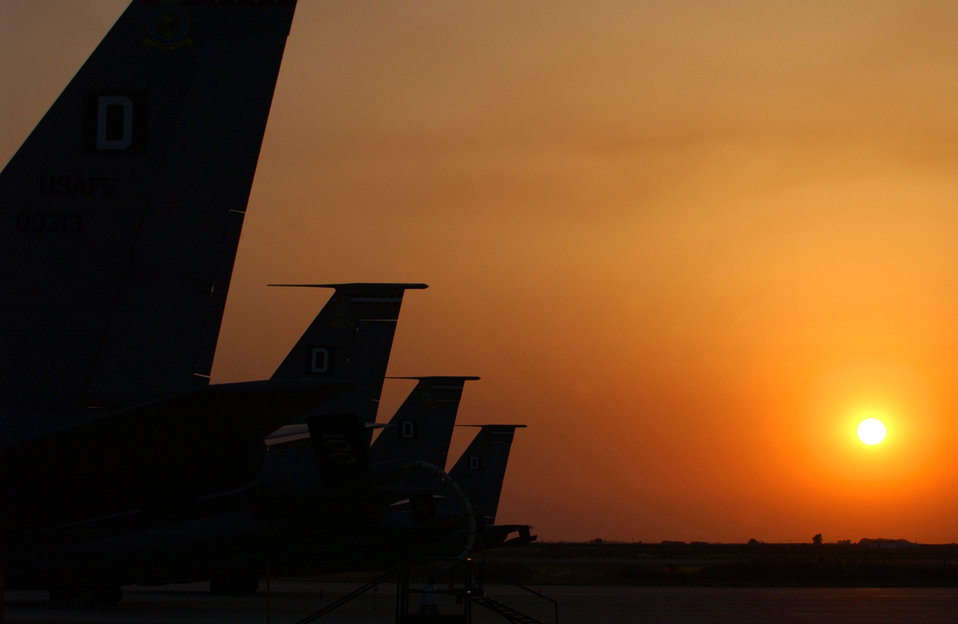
Tankers at sunset

MORON AIR BASE, Spain -- KC-135 Stratotankers sit parked on the ramp here at sunset July 14.